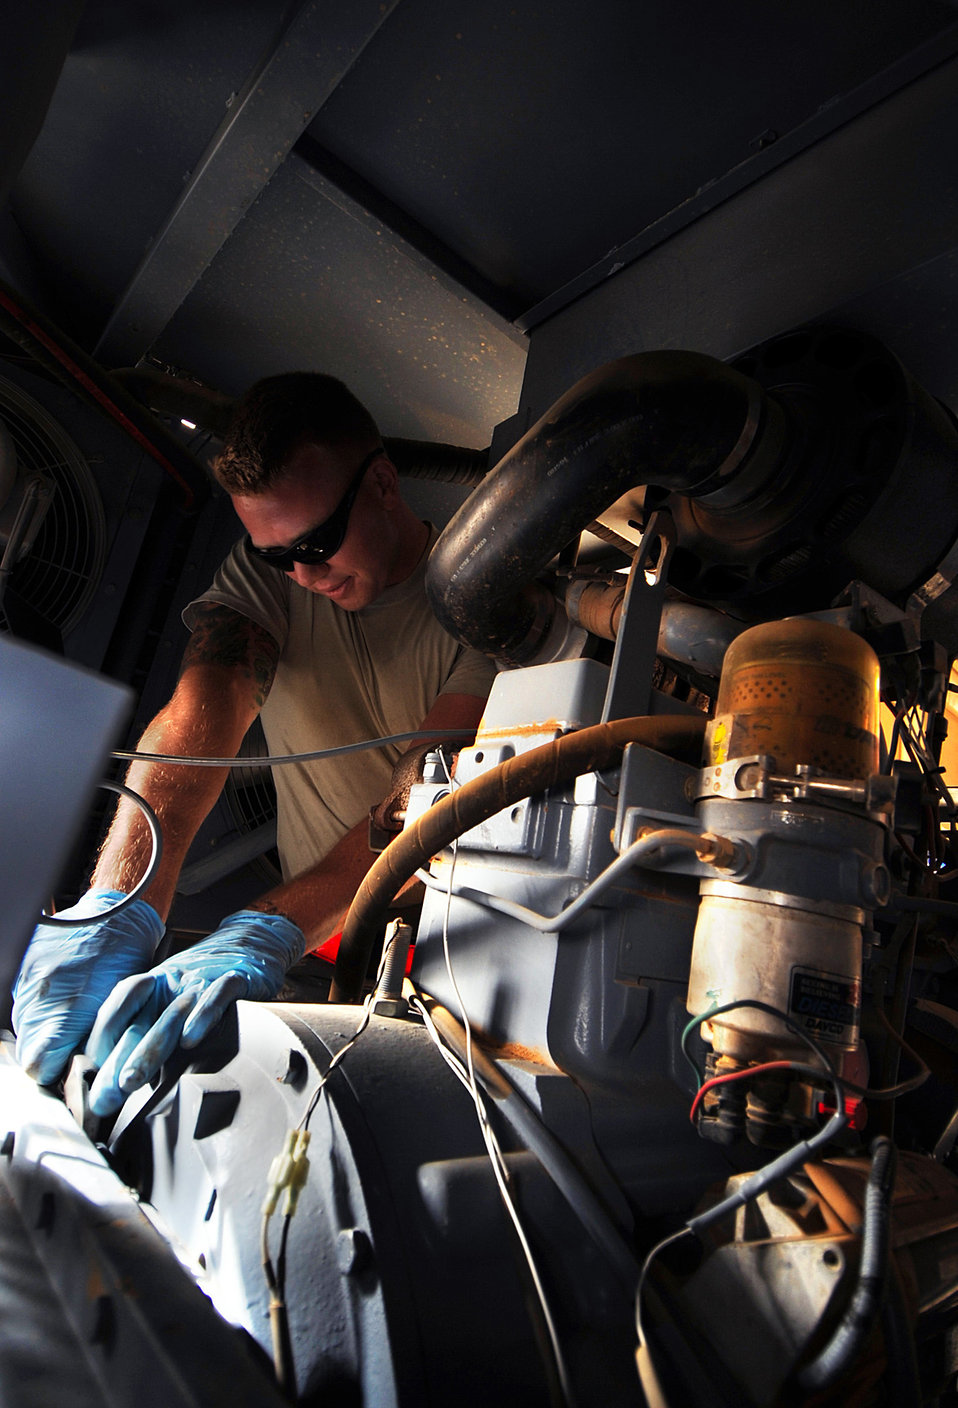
Airmen maintain the fight

Senior Airman Seth Winship checks for leaks inside a generator while performing maintenance on the flightline, April 6, 2011, at an air base in Southwest Asia. Airman Winship is assigned to the 386th Expeditionary Maintenance Squadron.